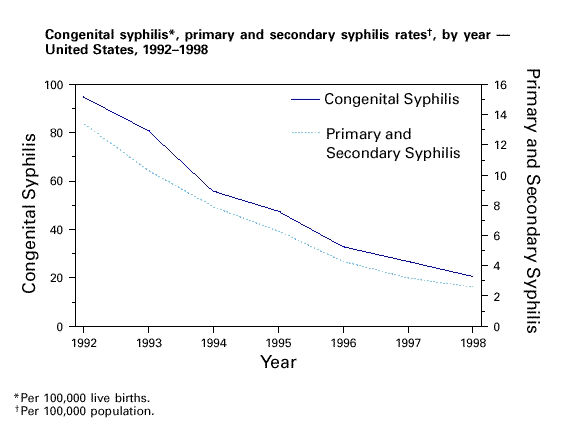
Congenital syphilis, primary and secondary syphilis rates, 1992-1998.